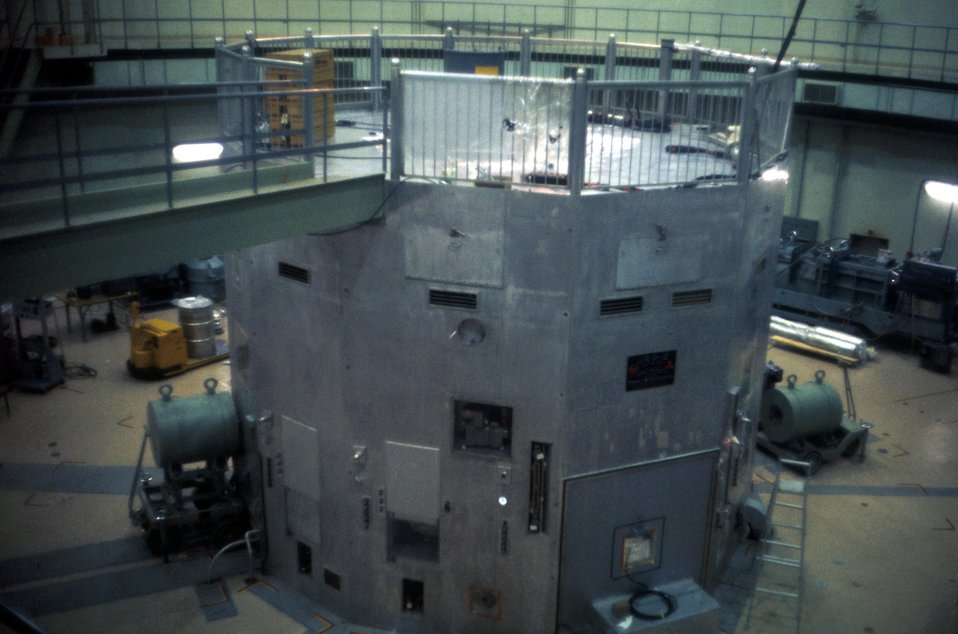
Japan Research Reactor #2. Atoms for Peace Reactor. c. 1960